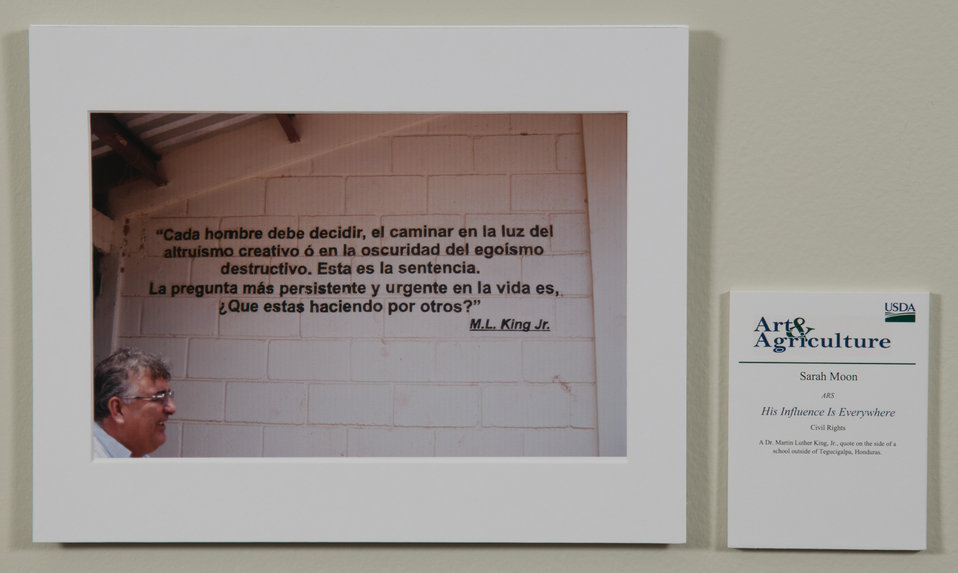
Online Viewer's Choice entries of the 2013 Art & Agriculture, Tuesday, July 9, 2013, in the South Building, Washington, D.C. Themes were expressed by employees from across the department and the contest was open to full-time and part-time USDA employees. Winning artwork will be displayed till the end of the year. U.S. Artistic expression is a creative outlet that is vital for an individual to grow and develop.